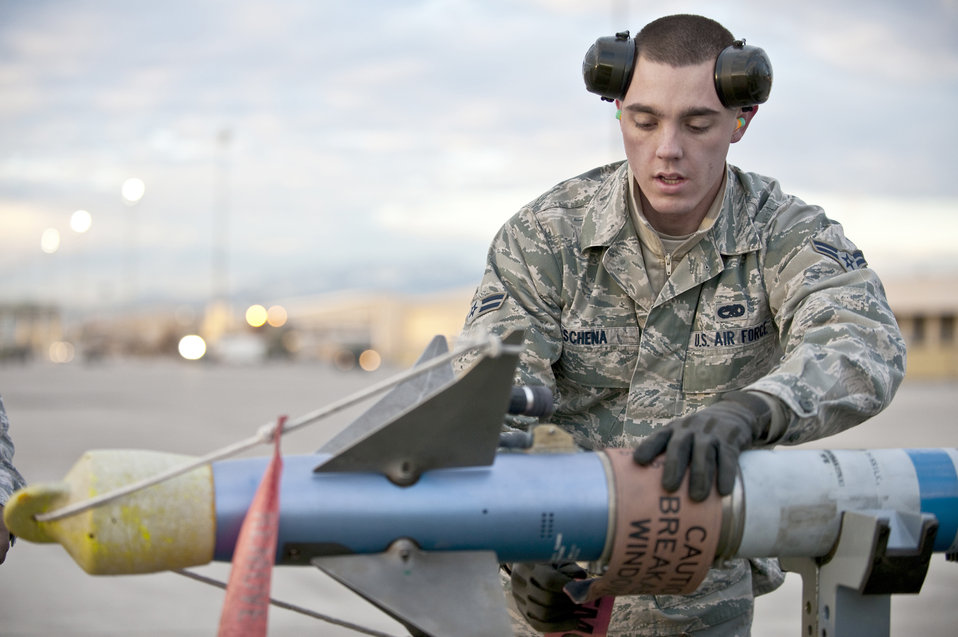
Nellis weapons load competition

Airman 1st Class Michael Schena conducts pre-load checks on an AIM-9 air-to-air missile during a weapons load competition Jan. 7, 2011, at Nellis Air Force Base, Nev. Weapons load competitions are conducted quarterly to keep Airmen sharp and recognize superior performers. Weapons load teams are evaluated for their use of the checklist, safety and overall speed. Airman Schena is an aircraft armament systems apprentice with the 757th Aircraft Maintenance Squadron.